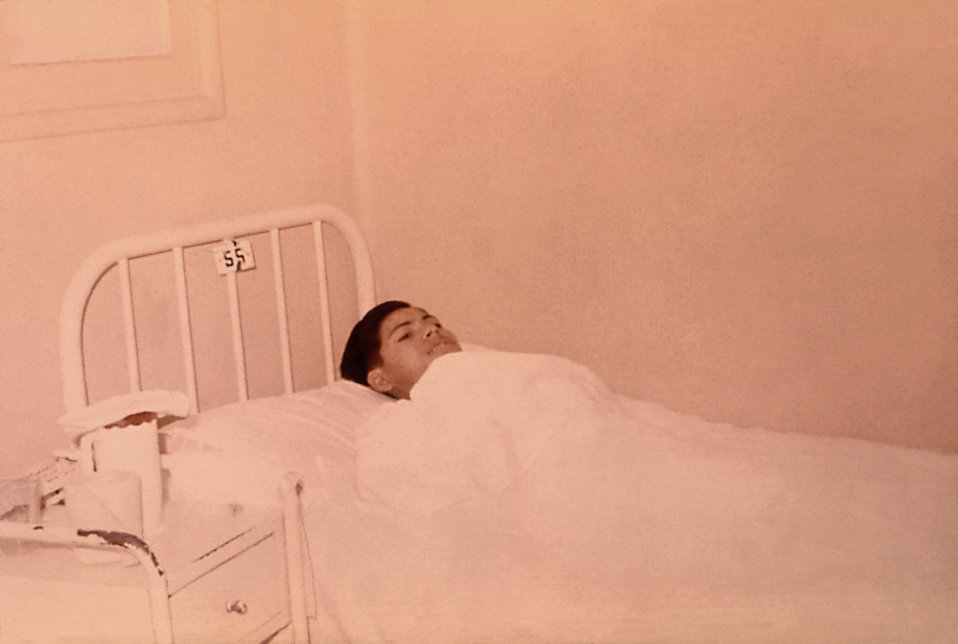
This patient presented with Brucellosis, which is also known as 'Malta fever' and 'undulant fever', which is sometimes fatal.